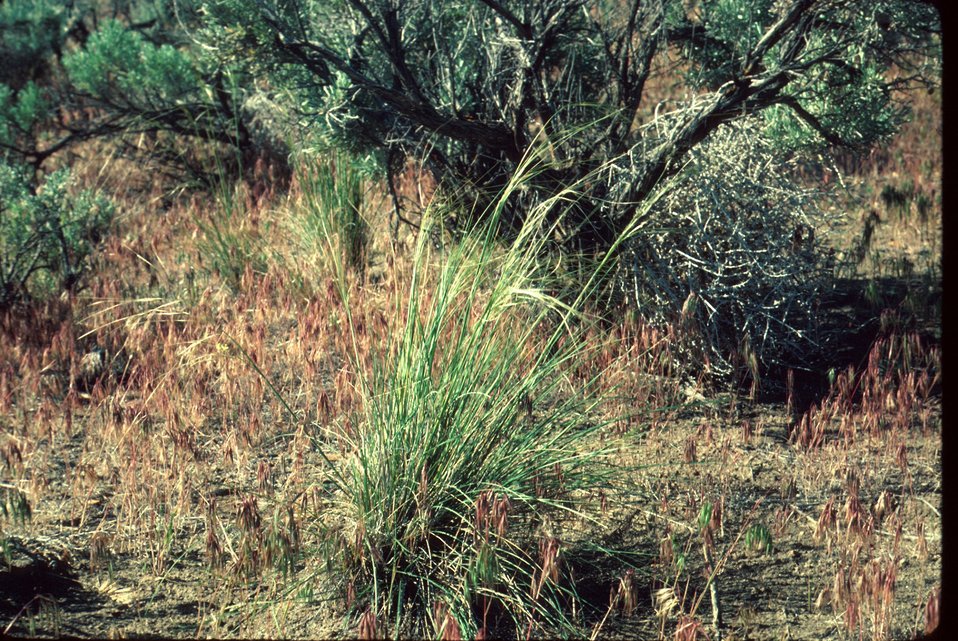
Stipa comata needle and thread grass grass